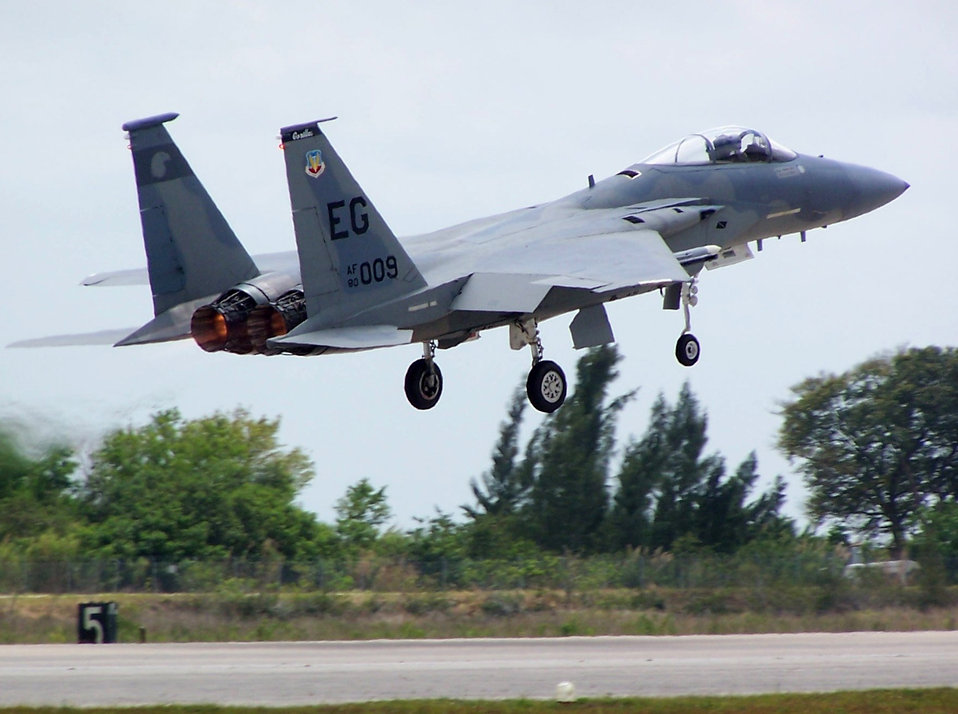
Reserve, active-duty pilots battle for air superiority

HOMESTEAD AIR RESERVE BASE, Fla. -- An F-15 Eagle takes off from here for a dissimilar aircraft combat training mission against F-16 Fighting Falcons. The Eagles are assigned to the 58th Fighter Squadron at Eglin Air Force Base, Fla., and the F-16s are from Homestead's 93rd FS.